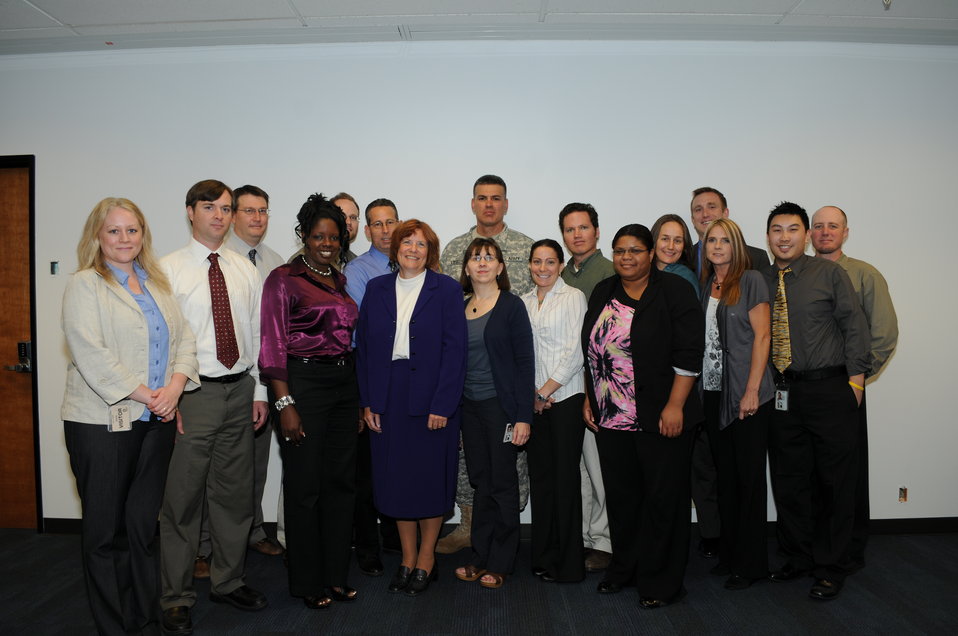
District employees complete leadership development program

The graduating class of the U.S. Army Corps of Engineers Sacramento District’s Leadership Development Program tier two, (from left to right) Megan Brogger, Will Ness, Tom Goebel, Lisa Lambert, Nick Applegate, Martin Fahning, Pat McQueary, Robyne Fawx, Col. Bill Leady, Sarah Ross, James Stellmach, Erica Taylor, Angela Bradley, Adam Riley, Kim Woolf, Kevin Lee and Adam Thompson, photographed at the district’s headquarters in Sacramento, Calif., July 26.